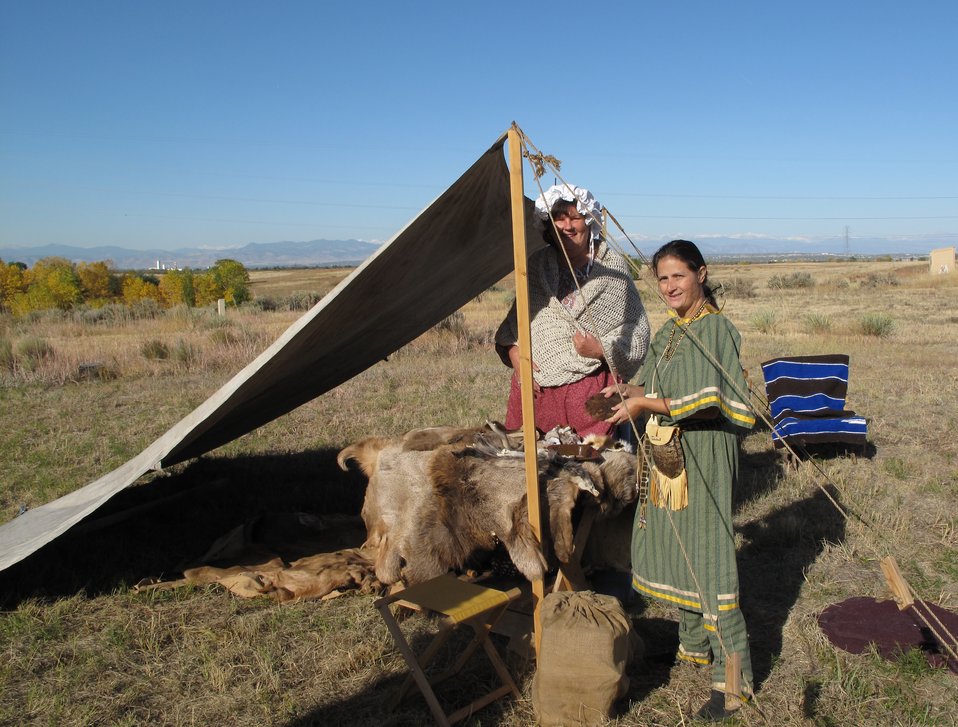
Refuge Round-up 2010

The colonial women!